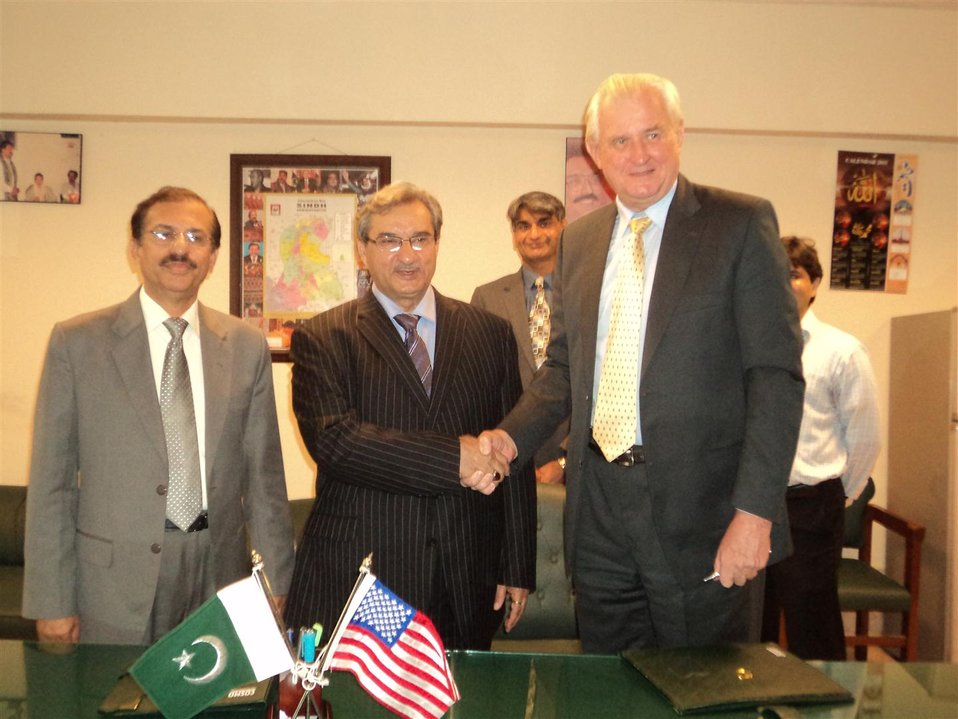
MoU between GoS and USAID

Karachi, September 4, 2012 - Deputy Mission Director, U.S. Agency for International Development (USAID), Edward Birgells, and Secretary of Education, Mukhtar Hussain Soomro, signed a Memorandum of Understanding (MOU) to repair and rehabilitate flood damaged schools in the four southern Sindh districts: Mirpurkhas, Sanghar, Umerkot and Tando Allahyar. The USAID’s $ 4 million commitment will assist in rehabilitation of selected public schools damaged in the 2011 floods in the four target districts.